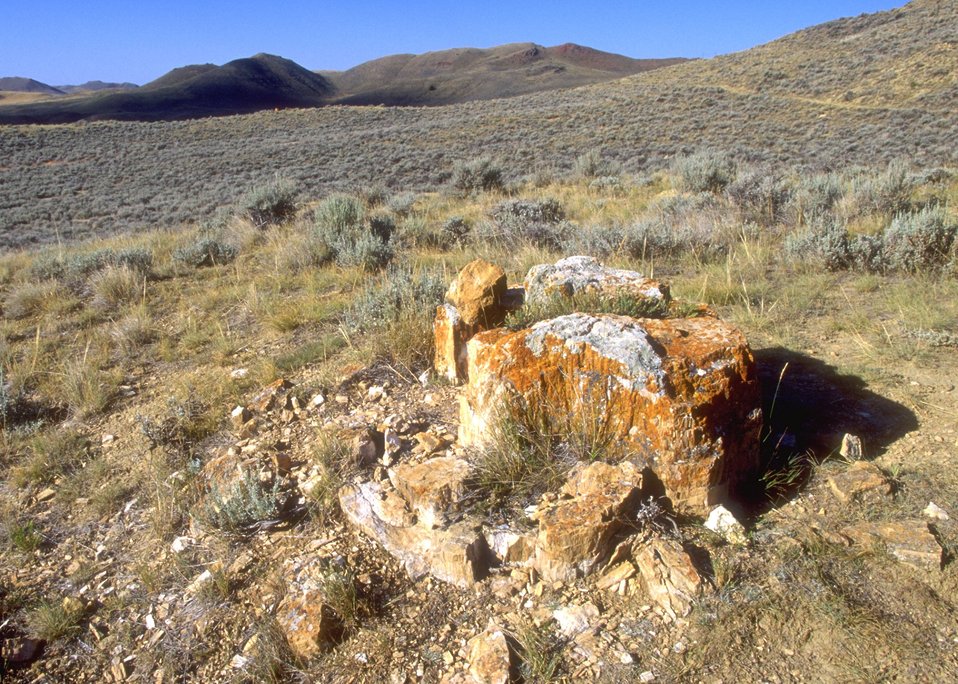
Dry Creek Petrified Tree Area, Buffalo Field Office.